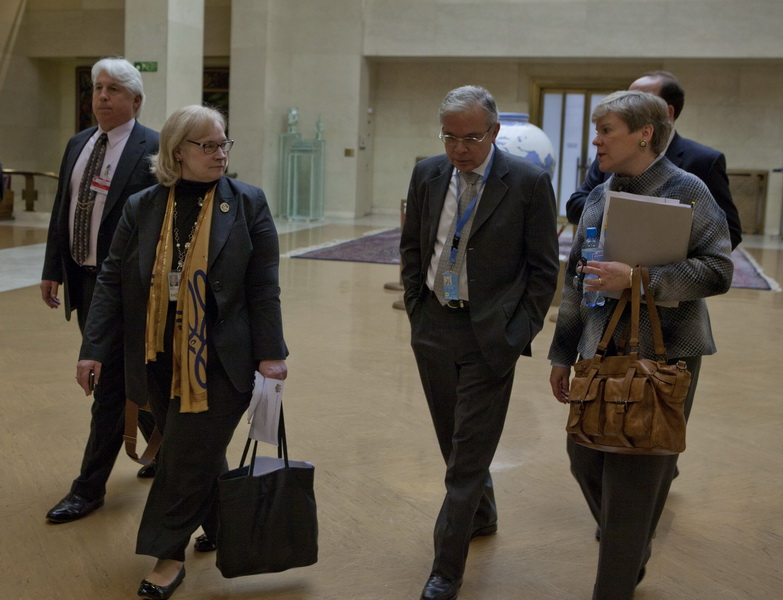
Ambassadors Kennedy, Guerrero and Assistant Secretary Gottemoeller Walk to the First Plenary

From left to right, Laura Kennedy, U.S. Ambassador to the Conference on Disarmament (CD); Antonio Guerrero, Brazilian Ambassador to the CD; and Rose Gottemoeller, Assistant Secretary of State for Arms Control, Verification and Compliance; walk to the First Plenary of the 2012 Session of the Conference on Disarmament in Geneva, Switzerland, on January 24, 2012.